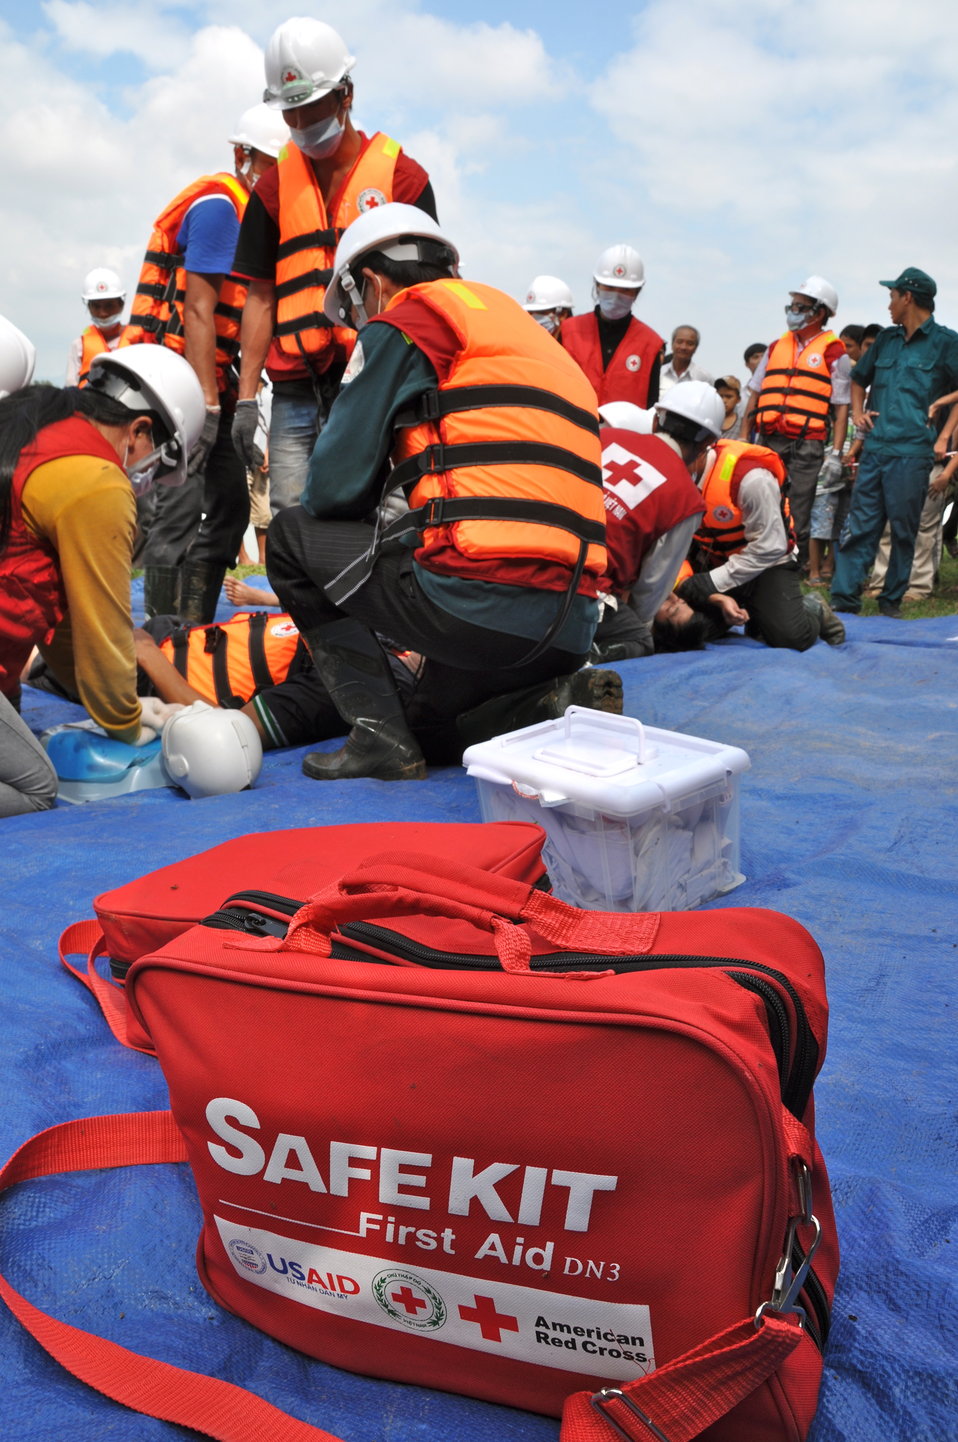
USAID, Red Cross Support Disaster Response Drill in Duy Hoa Commune, Quang Nam Province

Duy Hoa Commune, Quang Nam Province
December 5, 2012